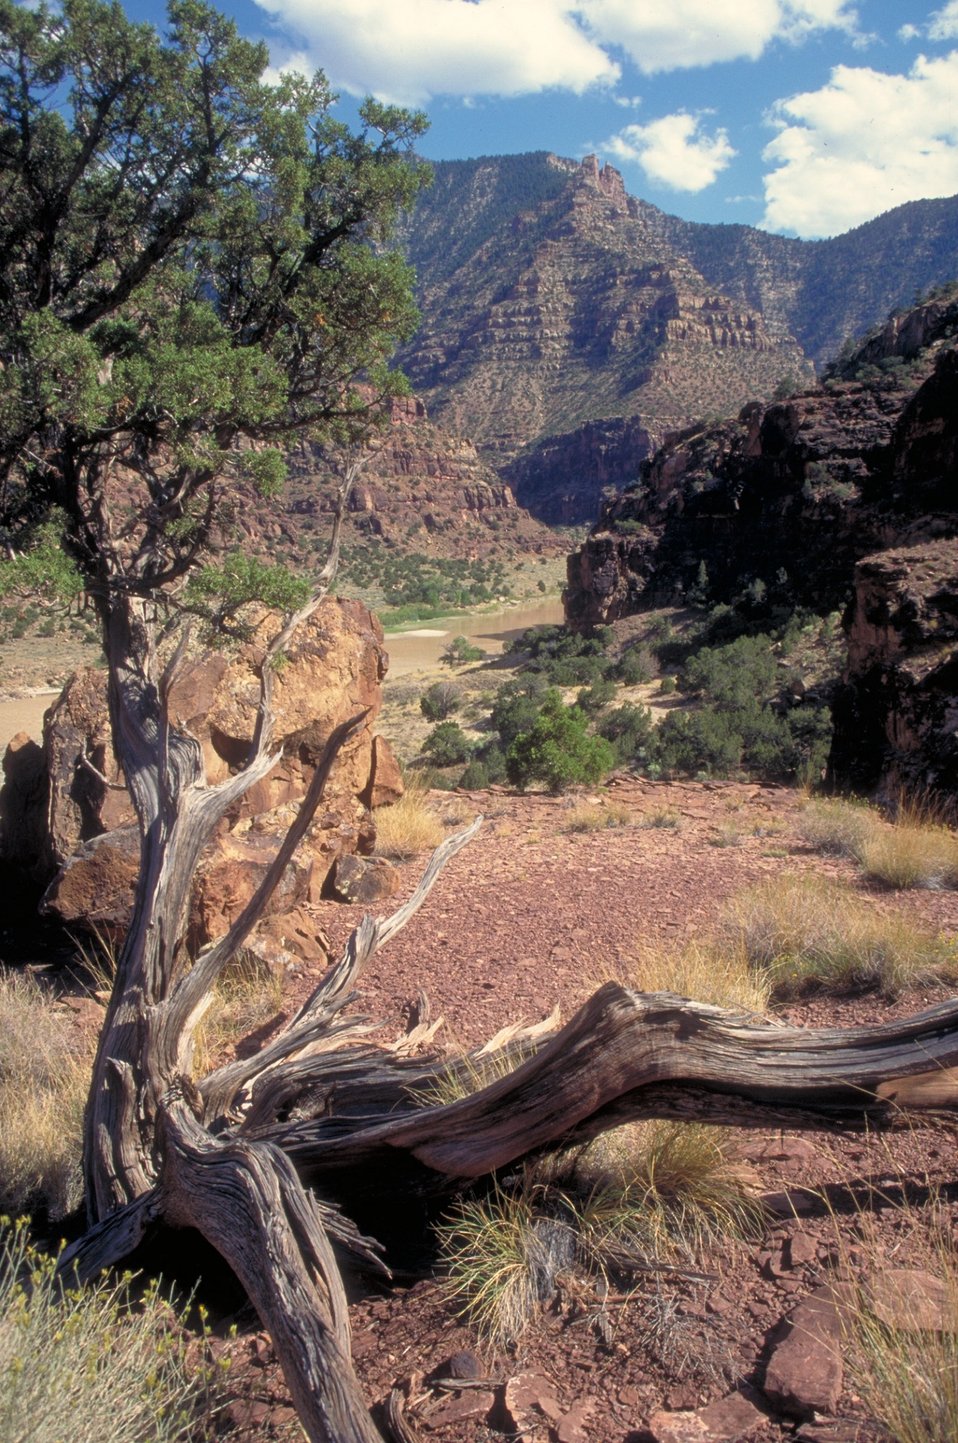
Desolation/Gray Canyons near Price, Utah.